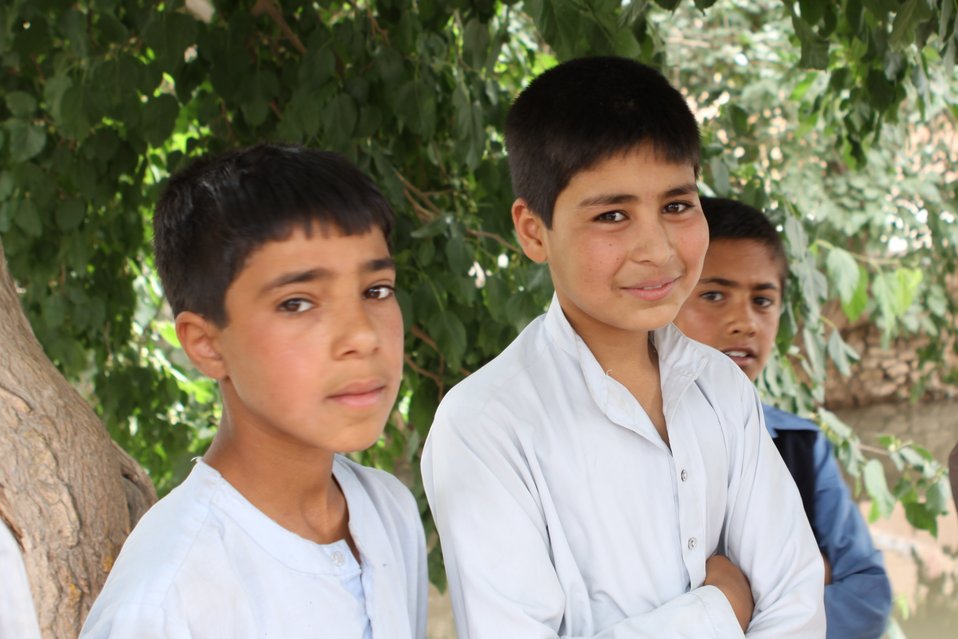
100525 Hirat Marble Conference 658